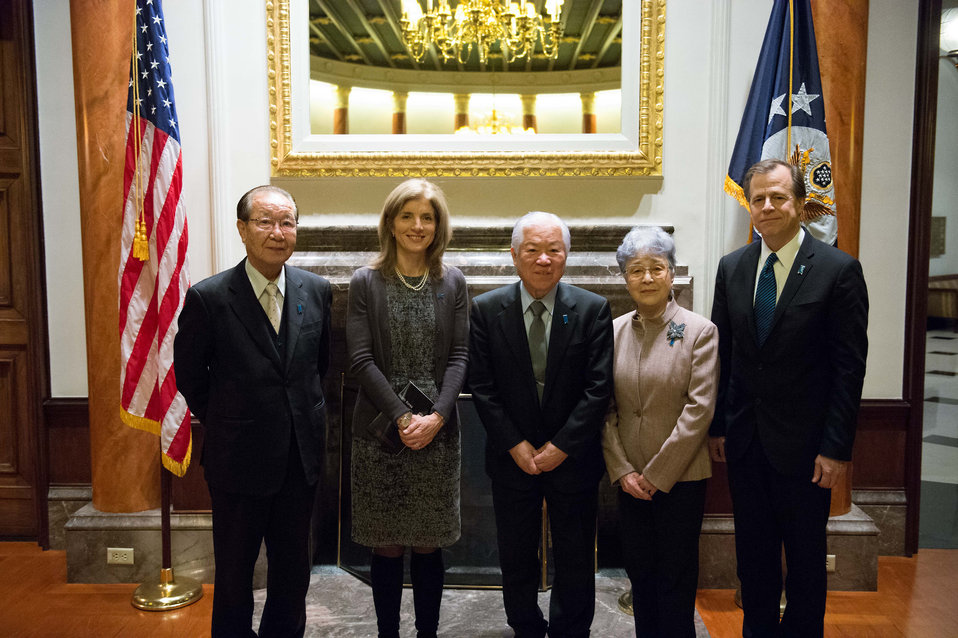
Ambassador Kennedy and Special Representaive Davies Meet Abductee Families

U.S. Ambassador to Japan Caroline Kennedy, with Special Representative for North Korea Policy Glyn Davies, meets with family members of the abductees in Tokyo, Japan, on January 30, 2014.